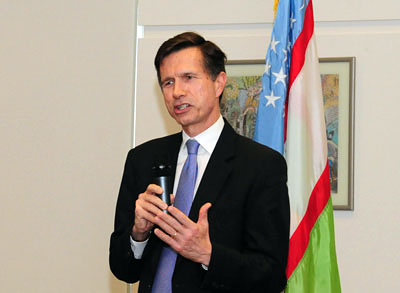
Assistant Secretary Blake Responds to a Question

U.S. Assistant Secretary of State for South and Central Asian Affairs Robert O. Blake responds to a question from an audience member at the Chai Chat with local Uzbek youth at U.S. Embassy Tashkent, Uzbekistan, during his visit, February 17-18, 2011.